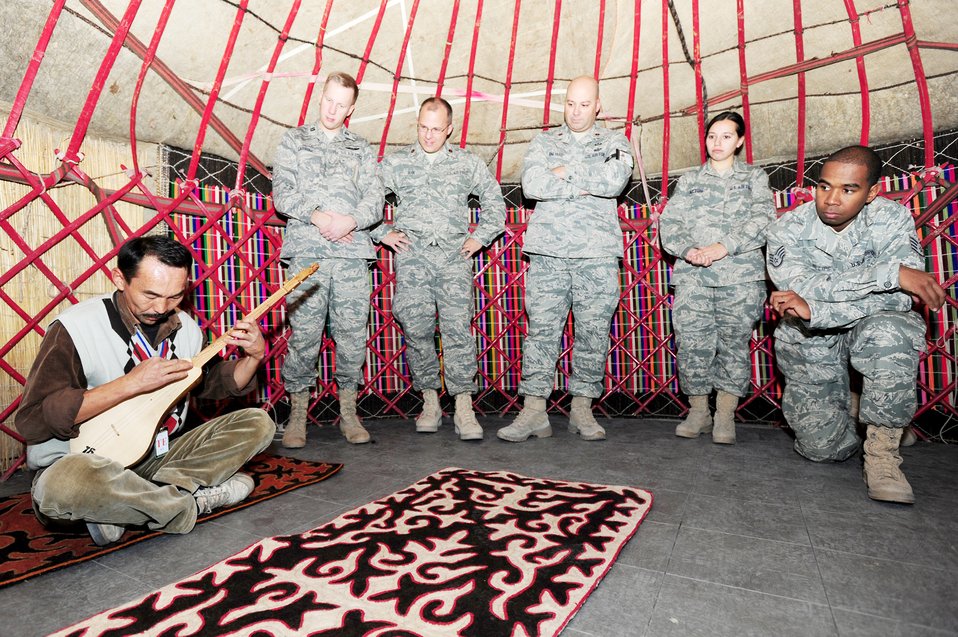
Airmen learn traditions during Kyrgyz Cultural Day

Airmen from the 376th Air Expeditionary Wing gather inside a Kyrgyz yurt to listen to music played on a komuz as part of Kyrgyz Culture day at the Transit Center at Manas, Kyrgyzstan, Oct. 24, 2009.